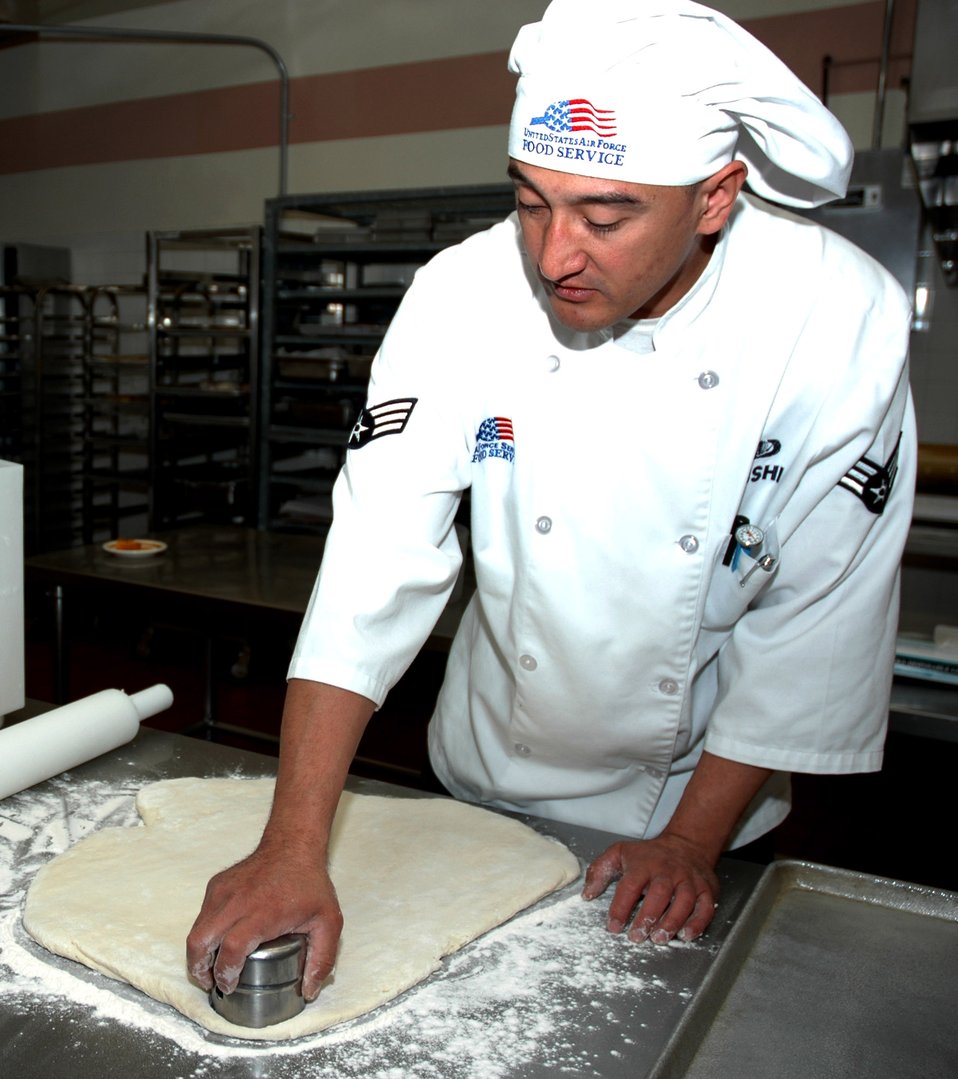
Nightshift chefs create dessert delights for Airmen

Senior Airman Tommey Fushi, a chef with the 366th Services Squadron at Mountain Home Air Force Base, Idaho, cuts out dough for biscuits. Airman Fushi works the night shift baking various breads, cookies, cakes and other treats for the Wagon Wheel Dining Facility.